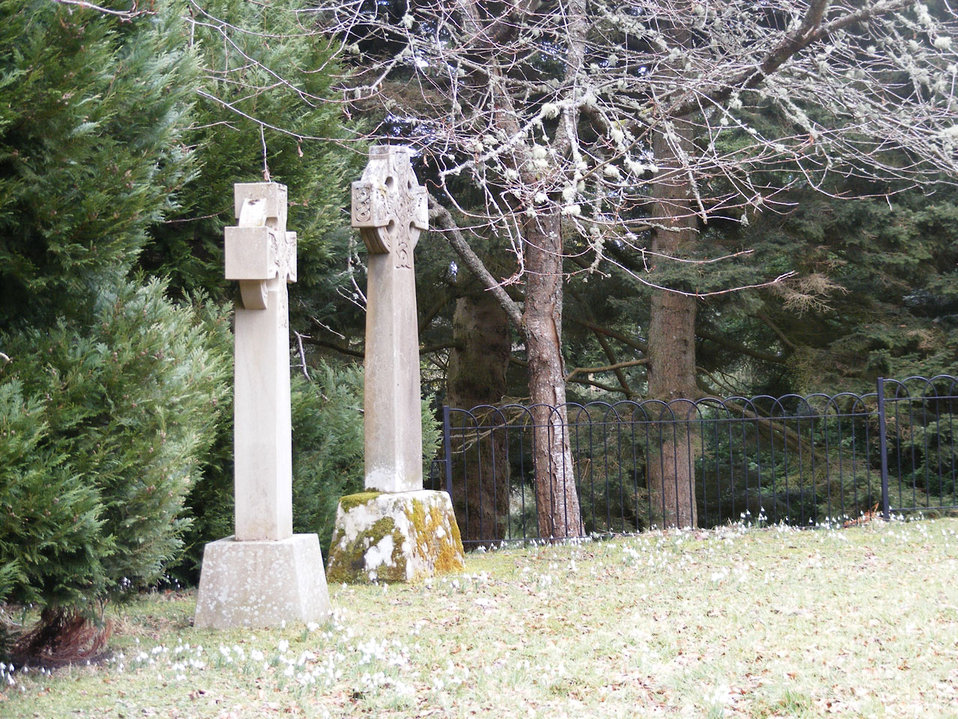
The sentinels

Gravestones.